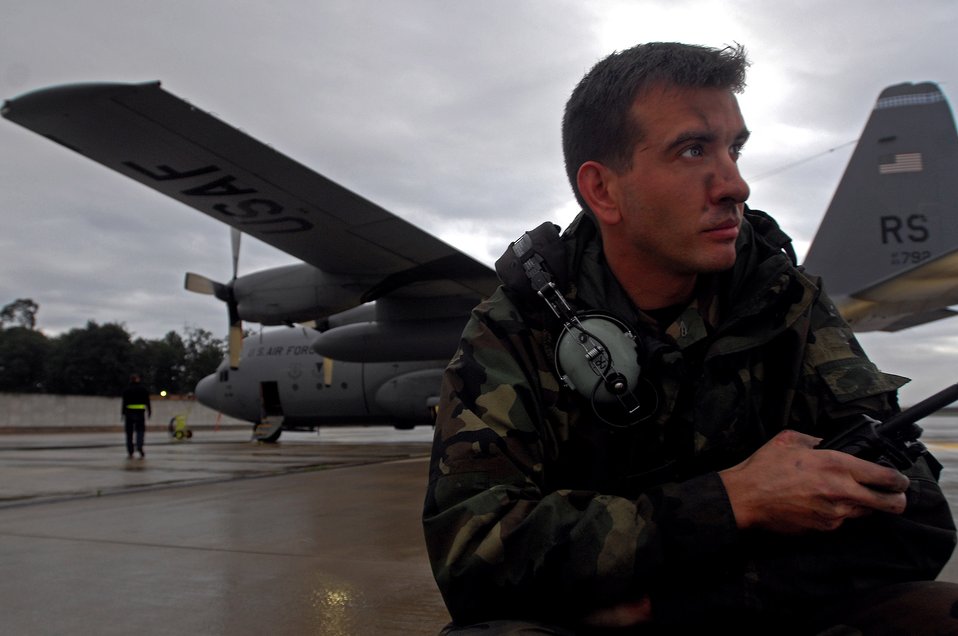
'Herk' break

Senior Airman Nichols Chaney takes a break before continuing routine maintenance on a C-130 Hercules Sept. 5 at Ramstein Air Base, Germany. He is a maintainer with the 86th Aircraft Maintenance Squadron.